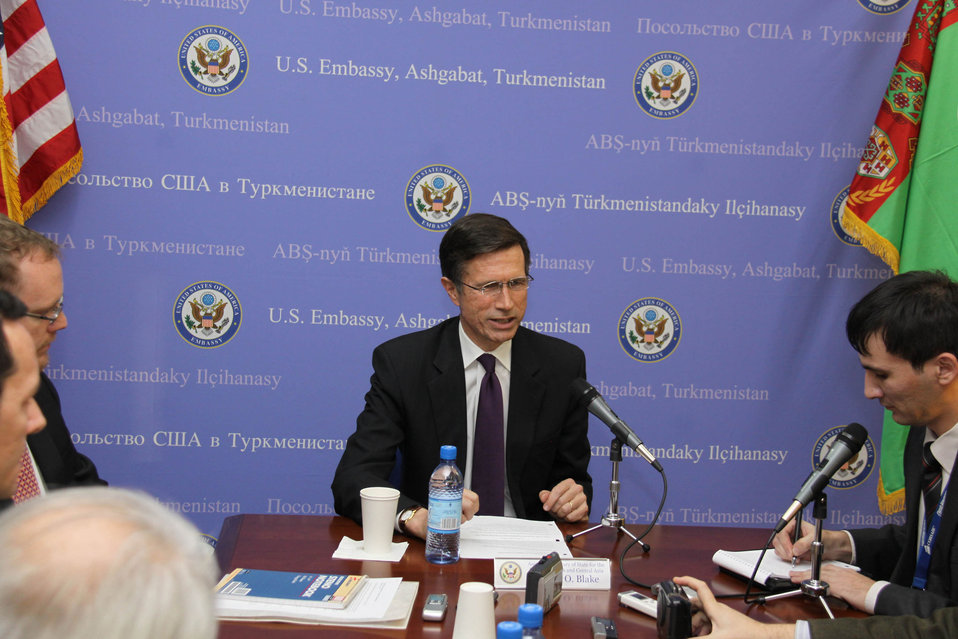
Assistant Secretary Blake Holds a Press Conference

Assistant Secretary of State for South and Central Asian Affairs Robert O. Blake holds a press conference following the U.S.-Turkmenistan Business Council at the U.S. Embassy Ashgabat, Turkmenistan, on February 16, 2011.